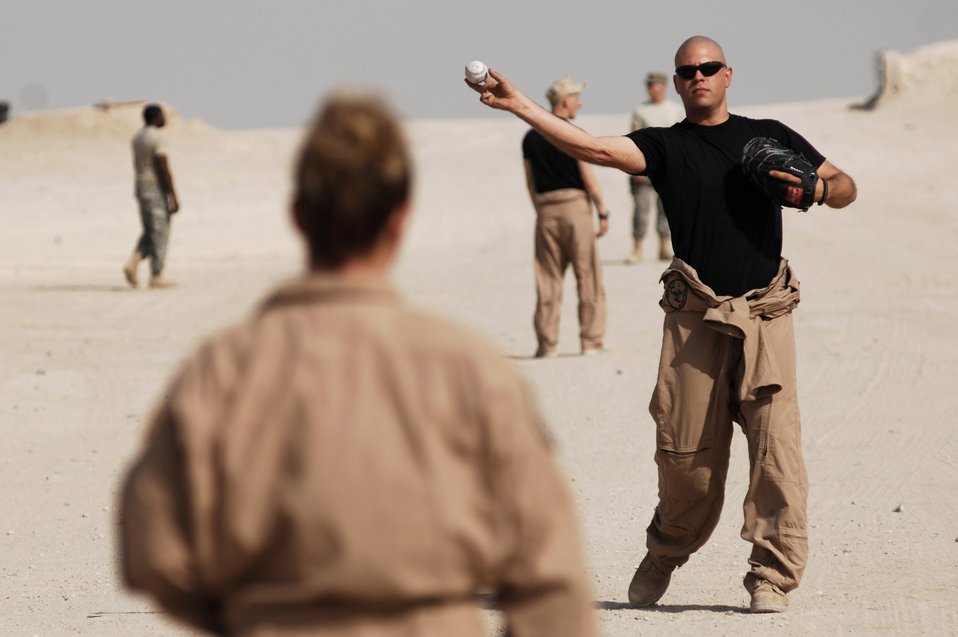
Combat truckers haul cargo through dangerous roads

Senior Airman Jacob Workman plays catch with Staff Sgt. Tiffany Jennings during some free time before starting the next leg of their convoy from an Army camp in Southwest Asia. Both Airmen are vehicle operators from the 586th Expeditionary Logistics Readiness Squadron, 70th Medium Truck Detachment. The Airmen of the 70th and 424th MTDs assigned to the 586th ELRS are in-lieu-of forces supporting the Army support line-haul convoy movements in and out of Iraq. Airman Workman is deployed from Moody Air Force Base, Ga., and Sergeant Jennings is deployed from Pope AFB, N.C.